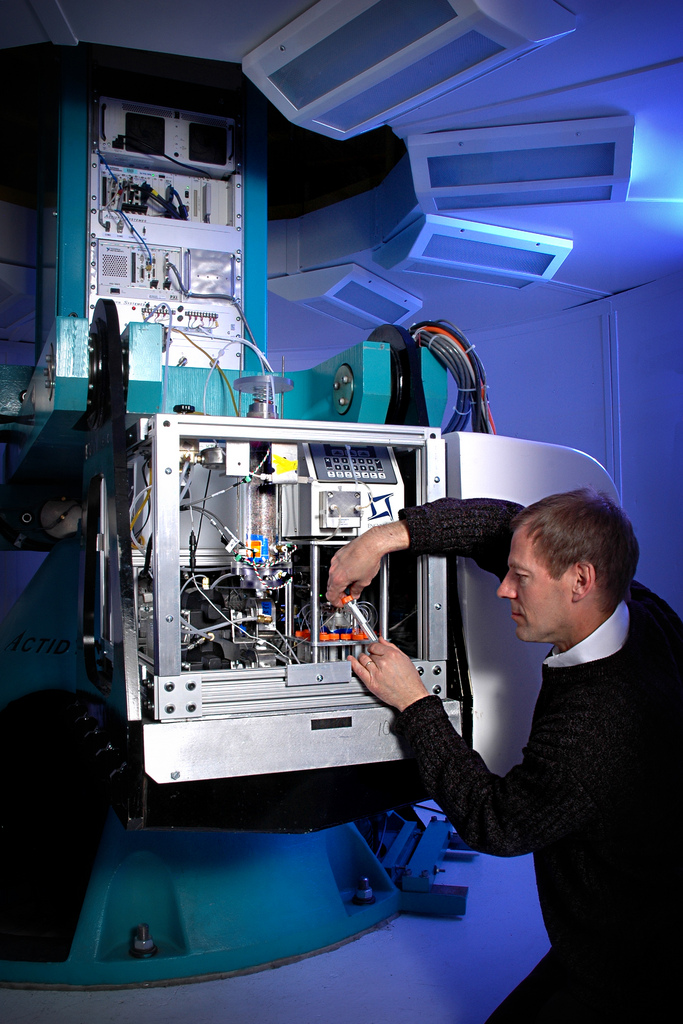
Geocentrifuge.

The Geocentrifuge Research Laboratory at DOE's Idaho National Laboratory was established to provide important environmental, geotechnical, energy, and national defense research for the nation.